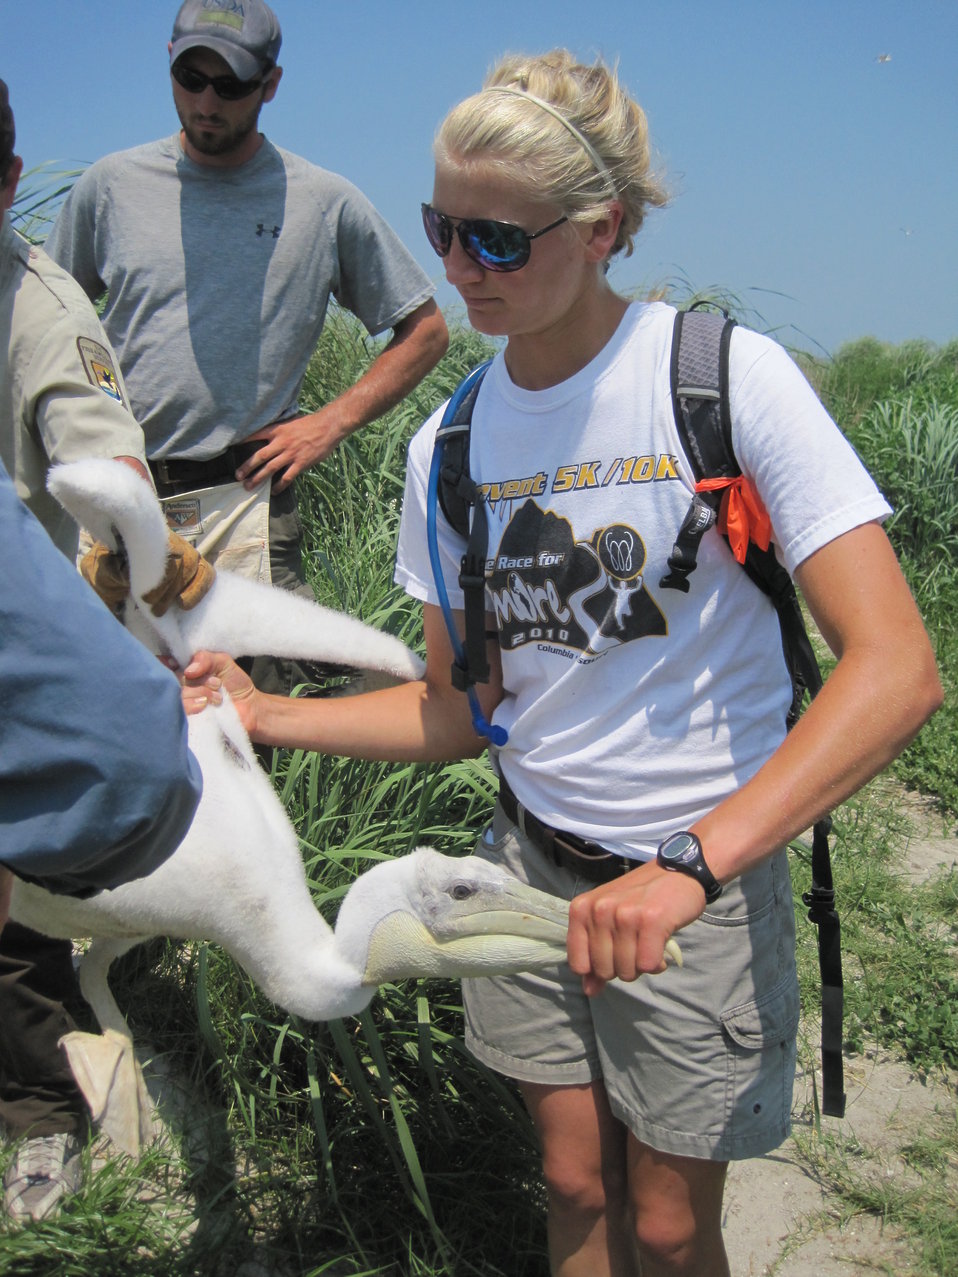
Pelican banding at Blackwater National Wildlife Refuge.